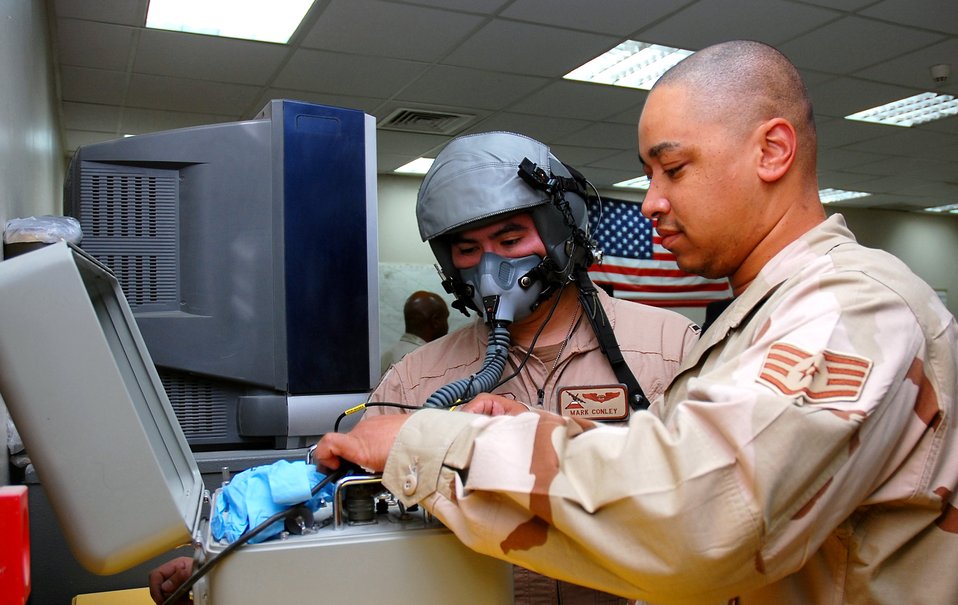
Life support

Staff Sgt. James Gainey performs a preflight equipment check for 1st Lt. Mark Conley Nov. 2 in Southwest Asia. Sergeant Gainey, a 386th Expeditionary Operations Group aircrew life support NCO in charge, and Lieutenant Conley, a 737th Expeditionary Airlift Squadron navigator, are both deployed from Yokota Air Base, Japan.